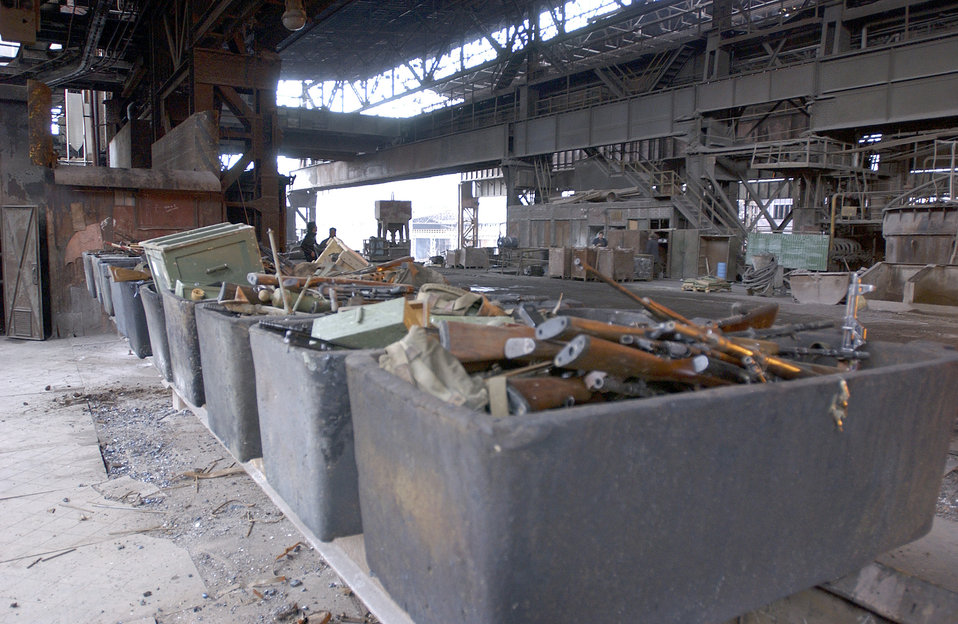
Joint Forge

ZANICA, Bosnia -- Weapons seized during Operation Harvest are readied for meltdown at the BH Steel Plant here Jan. 15. Operation Harvest is a program that allows citizens to turn their weapons in with total amnesty. In 2003 deployed forces destroyed more than 11,000 weapons at the plant.